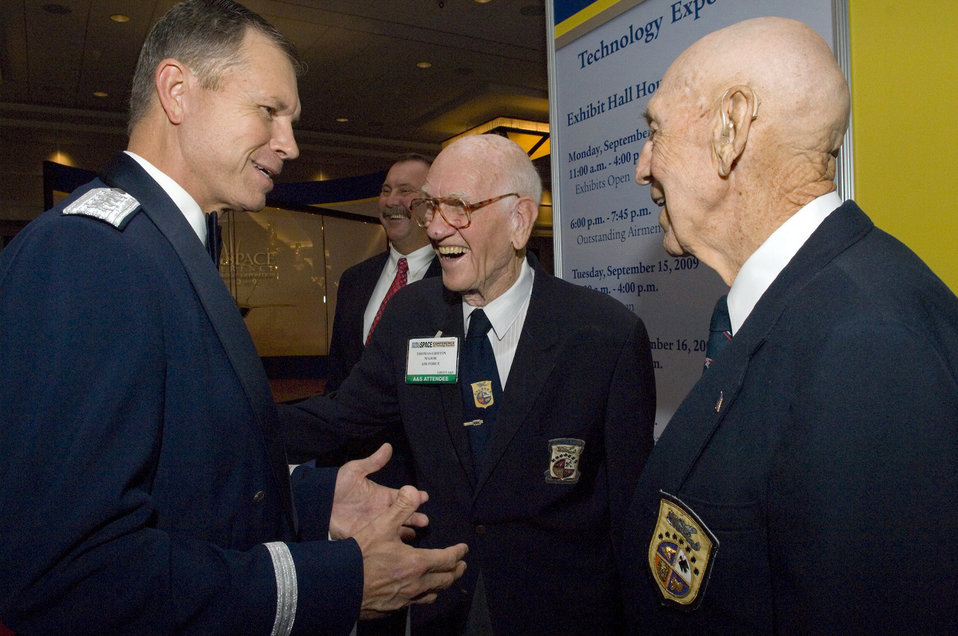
Air Force Association honors Doolittle Raiders, Tuskegee Airmen

Gen. William M. Fraser III speaks to retired Maj. Thomas Griffin and retired Lt. Col. Richard Cole at the Air Force anniversary dinner Sept. 16, 2009, at the Gaylord National Hotel and Convention Center in National Harbor, Md. General Fraser is the commander of Air Combat Command, and Major Griffin and Colonel Cole are members of the Doolittle Raiders. The dinner was the end of the 2009 Air Force Association Air & Space Conference and Technology Exposition.